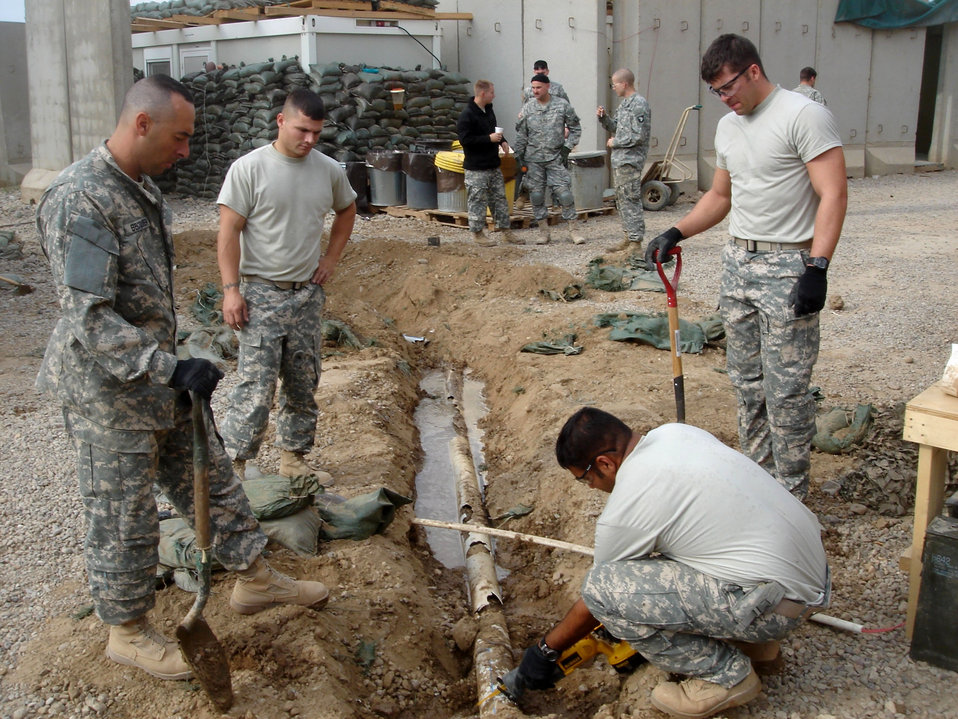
Balad Airmen help improve quality of life for Soldiers in Iraq

Tech. Sgt. John Becquer, (from left) Airman 1st Class Matthew Giacona and Staff Sgt. Caleb Dennis watch as Staff Sgt. Pranay Singh cuts through a drain pipe Jan. 11 at Patrol Base Olson, Iraq. The pipe will carry water to the showers, clothes washers and kitchen at Patrol Base Olson. The Airmen are all from the 732nd Expeditionary Civil Engineer Squadron Det. 6 deployed from Kadena Air Base, Japan.